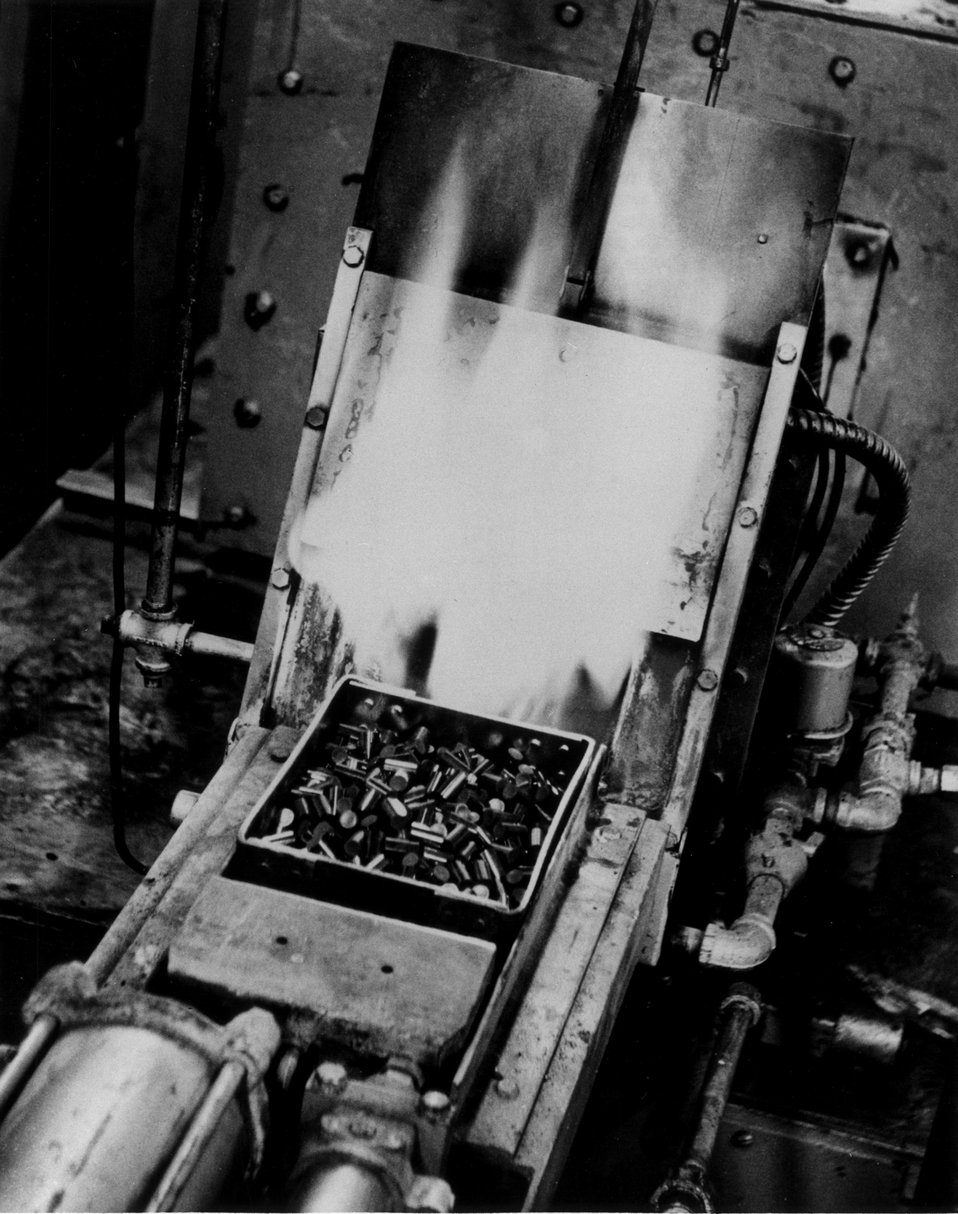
Closeup view of one of the principal steps in the fabrication of fuel elements for water-cooled reactors. c. 1964